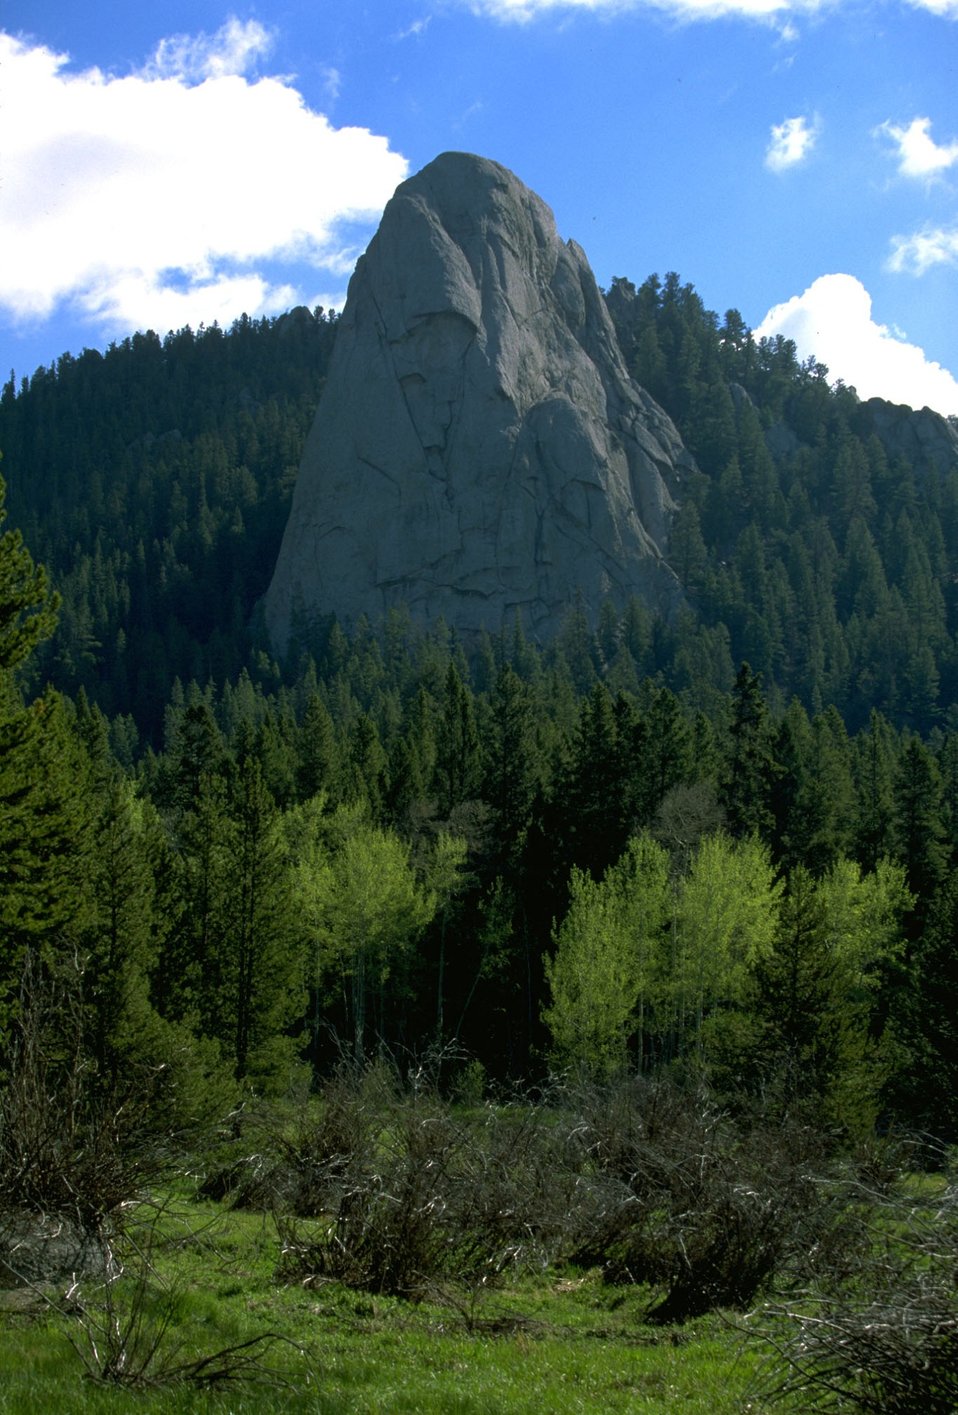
Scenic view of a Humbug Spires rock formation